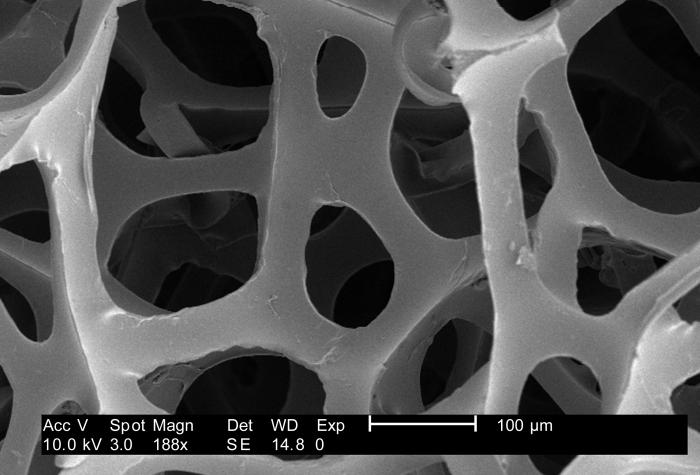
Under a low magnification of 188x, this 2007 scanning electron micrograph (SEM) depicted the fibrous configuration of a dry macrofoam sponge swab. This swab, as well as three other materials, including polyester (see PHIL 9735), rayon (see PHIL 9734), and cotton (see PHIL 9732, 9733) were scanned for a CDC study involving their efficiency in recovery of Bacillus anthracis bacterial spores from steel coupons that had been inoculated with a spore suspension of known concentration. See PHIL 9736, and 9737 for other views of this material. The article discussing the description of this swab material analysis, and the analytical results was published in 'Emerging Infectious Diseases', Vol. 10, No. 6, June, 2004, and was entitled, Swab Materials and Bacillus anthracis Spore Recovery from Nonporous Surfaces. A link to this article is found below.